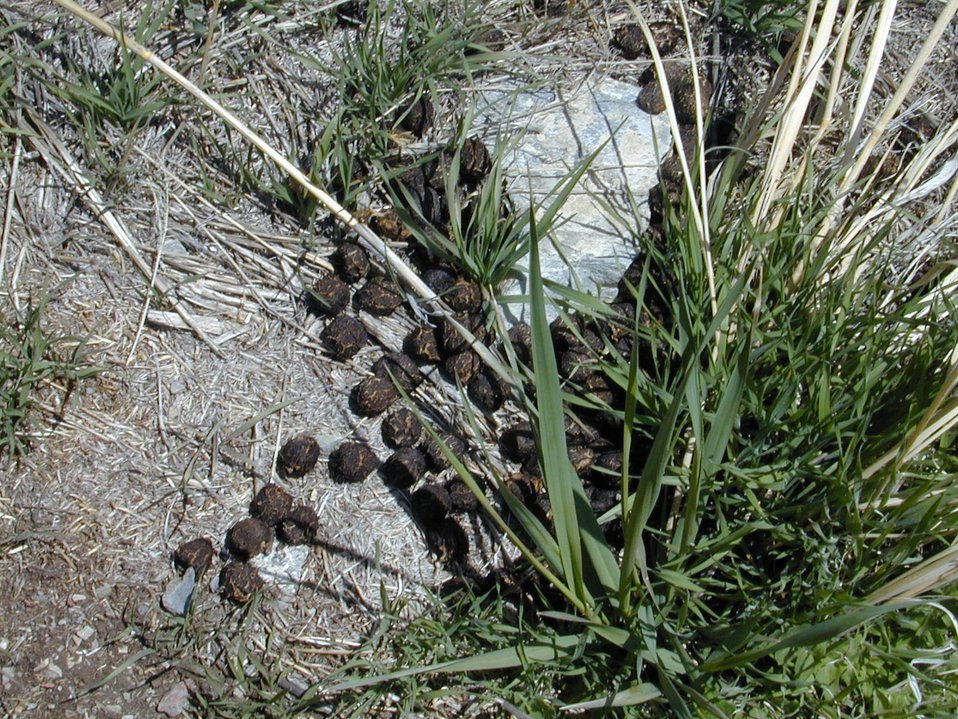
Birch Creek Valley Salmon Field Office Upper Columbia-Salmon Clearwater District